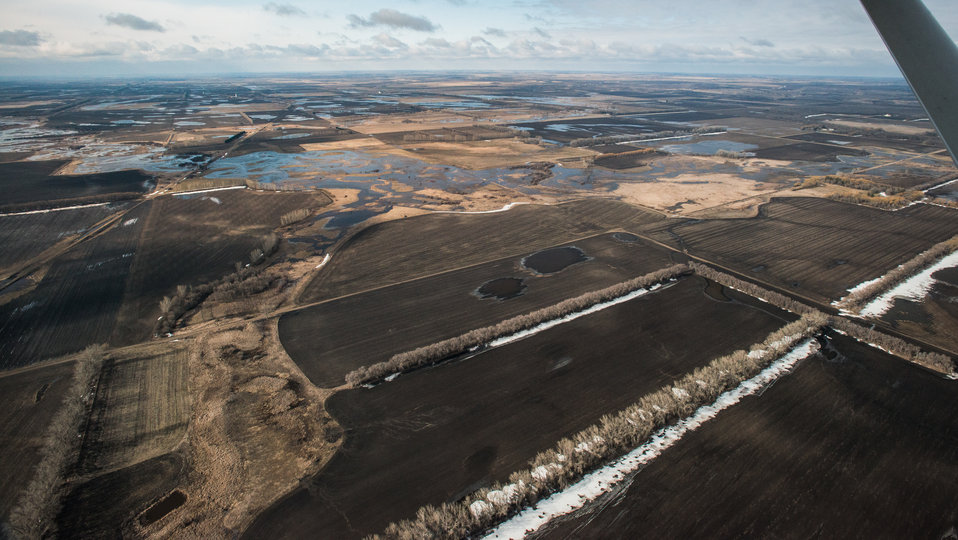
Proposed Dam site #10, on Turtle River Watershed in Grand Forks County, ND, part of the Red River basin, on Wednesday, May 1, 2013. To learn about the Red River Basin Initiative, see www.mn.nrcs.usda.gov/news/features13/RRBI.html.